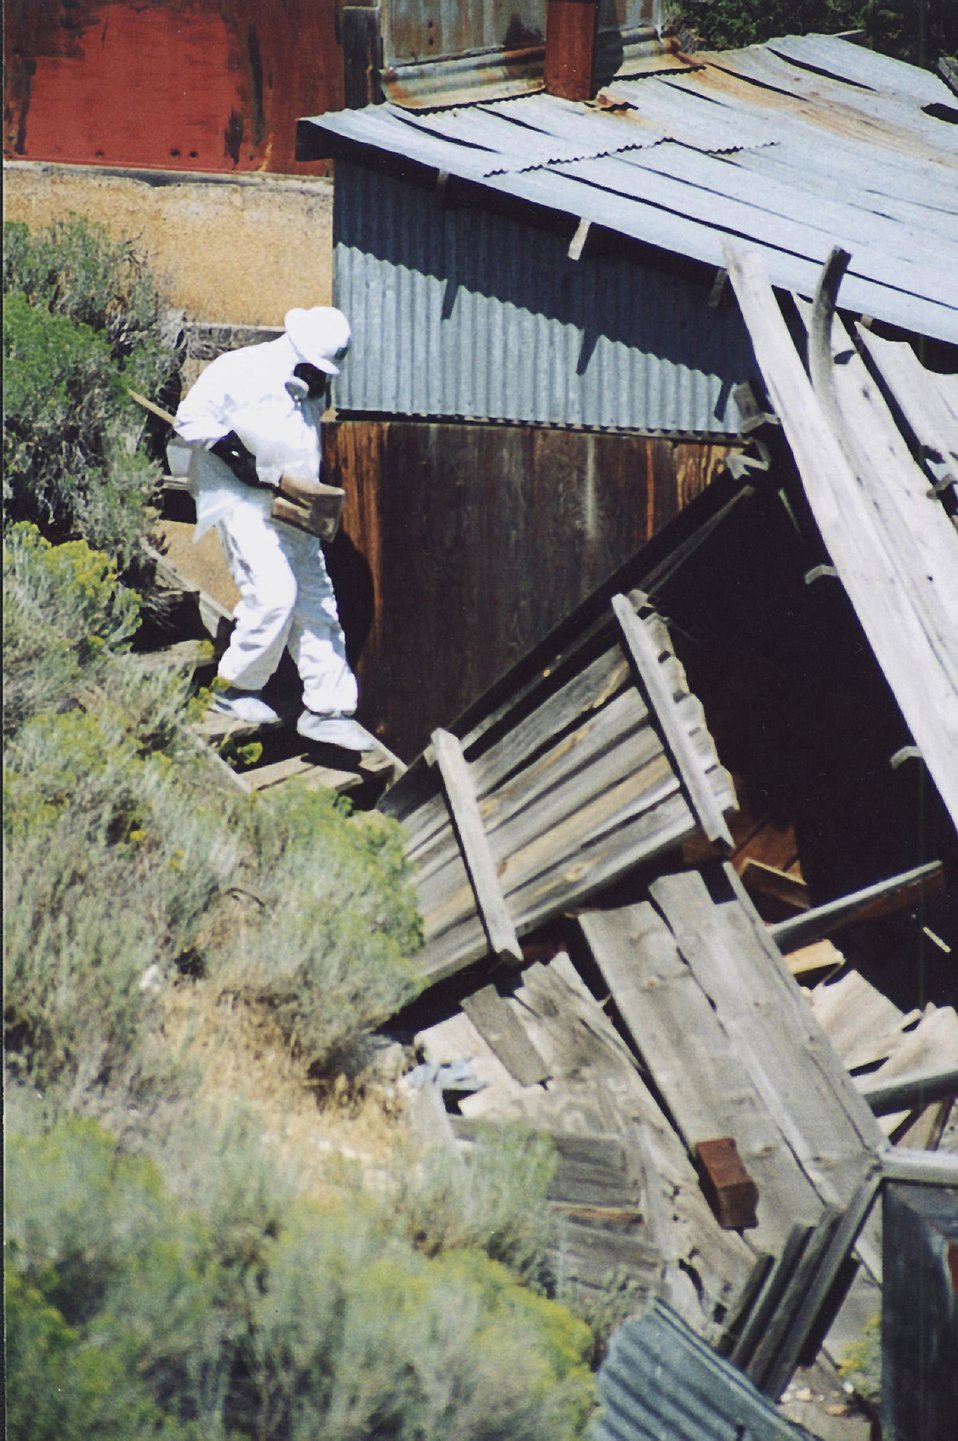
Glass Butte 4 Abandoned Mine Lands just before hazmat clean up. 8/22/02 Photo by Mark Armstrong